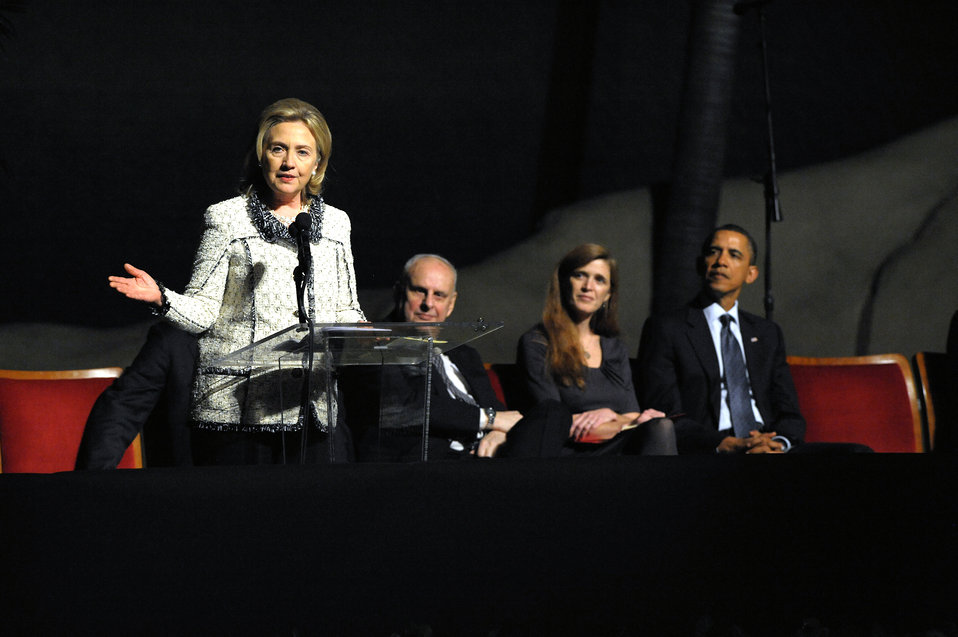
Secretary Clinton Delivers Remarks at Richard C. Holbrooke's Memorial Service

U.S. Secretary of State Hillary Rodham Clinton delivers remarks at the memorial service for Richard C. Holbrooke at the John F. Kennedy Center for the Performing Arts in Washington, D.C., on January 14, 2011. Former U.S. President Bill Clinton, right, and U.S. President Barack Obama, second from right, are sitting behind the Secretary.